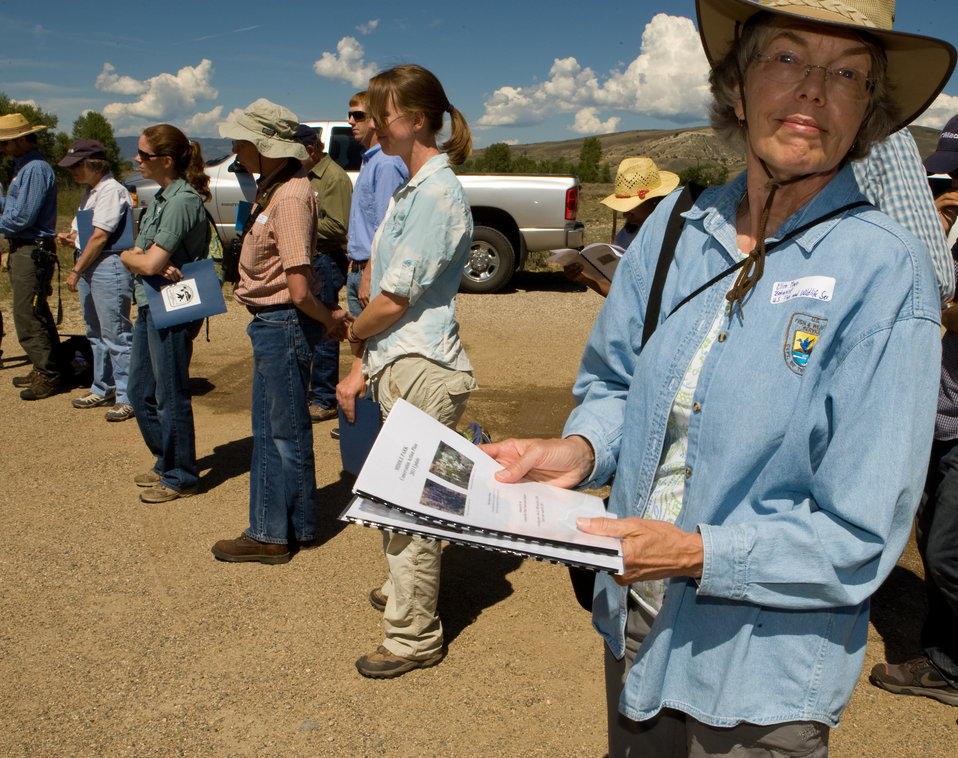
Colorado Rare Plant Conservation Initiative

The Colorado Rare Plant Conservation Initiative (RPCI) is a partnership of 23 statewide and regional agencies, private organizations, and academic institutions working to conserve 121 rare plants in Colorado. As part of these efforts the group developed the Colorado Rare Plant Conservation Strategy, developed Best Management Practices to reduce energy development impacts, addressed climate change, and developed focused strategies for the conservation of individual species at eight priority landscapes. The group has also worked to coordinate volunteer efforts for plant conservation across the state.